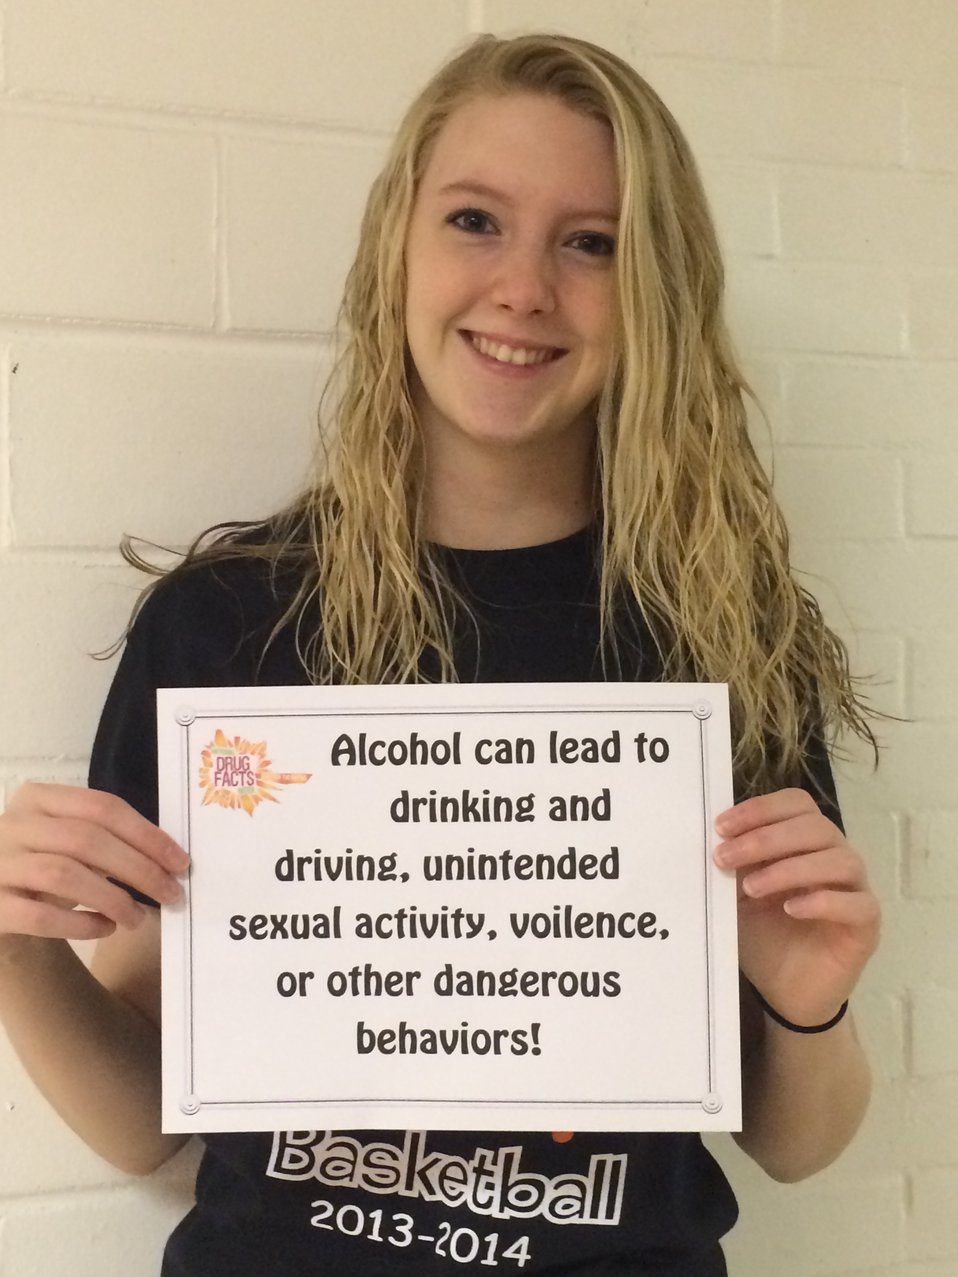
Take a Stand: NDFW 2014

Teenagers from the Van Buren County SAFE Coalition's, Youth Leadership Council (YLC) in Keosauqua, Iowa participate in various events during National Drug Facts Week, 2014.